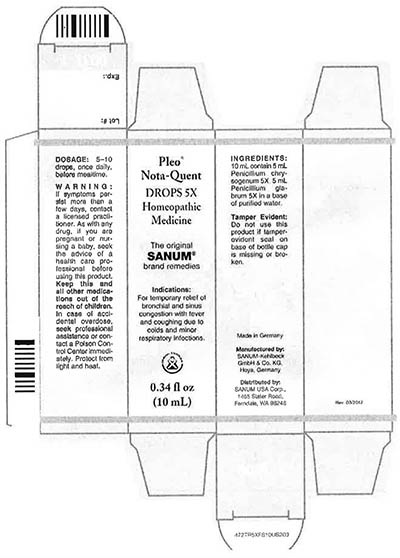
RECALLED – Homeopathic Drug Products

March 18, 2014 – Product Recall – Terra-Medica Issues Voluntary Nationwide Recall of Specified Lots of Pleo Homeopathic Drug Products Due to the Potential for Undeclared Penicillin.